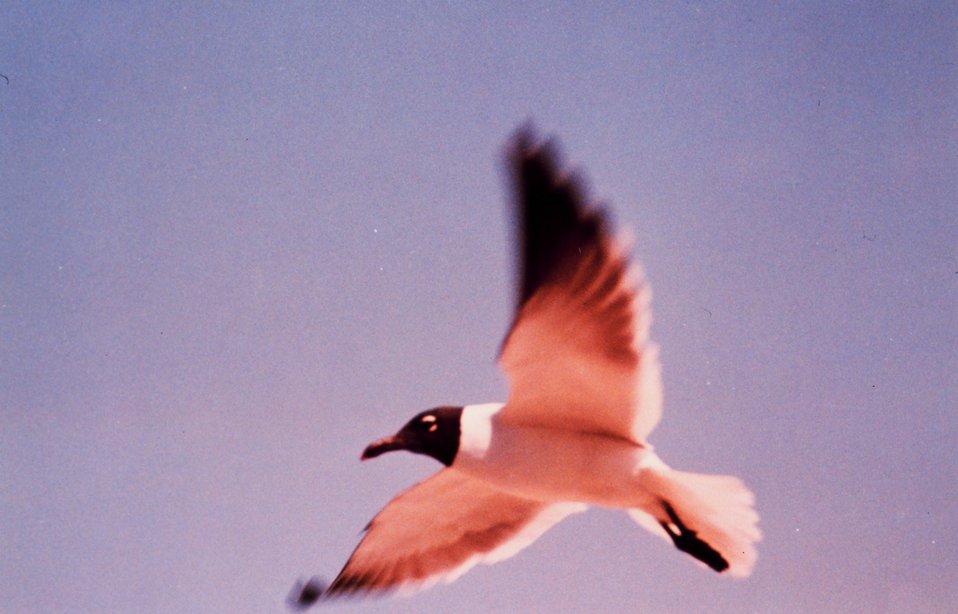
A sea gull in flight